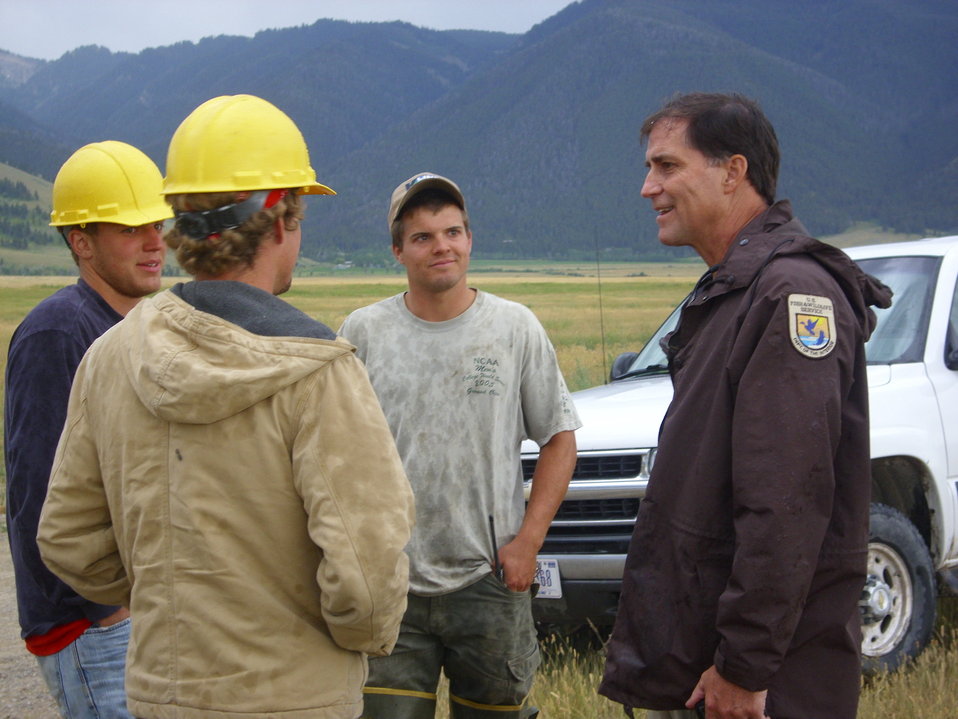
Dan at National Elk

Dan stops to chat during the day's rain storm.